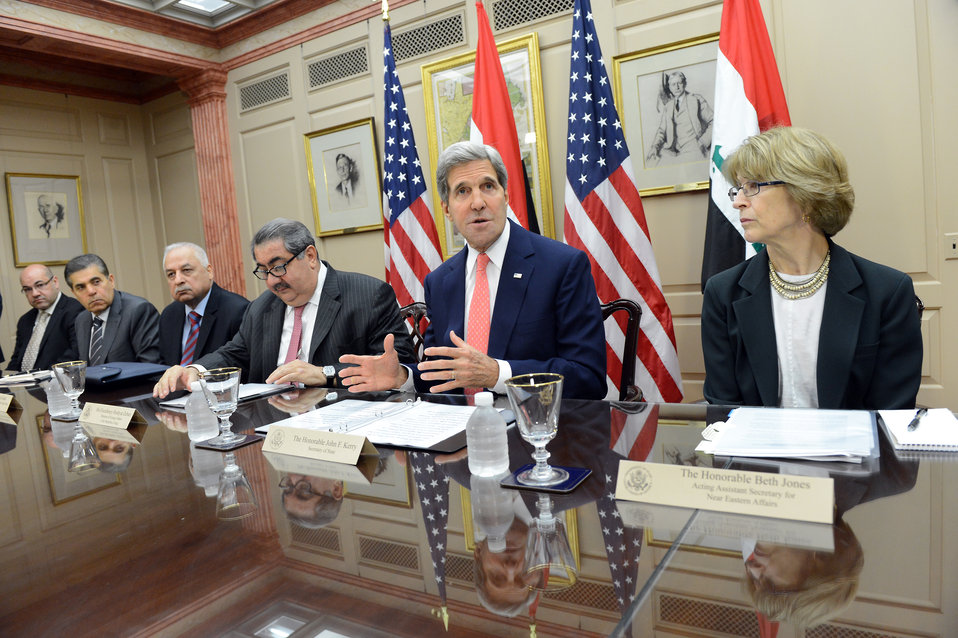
Secretary Kerry Delivers Remarks at the Fourth Meeting of the U.S.-Iraq Political and Diplomatic Joint Coordination Committee

U.S. Secretary of State John Kerry, with Iraqi Foreign Minister Hoshyar Zebari, delivers remarks at the fourth meeting of the Political and Diplomatic Joint Coordination Committee (JCC), under the U.S.-Iraq Strategic Framework Agreement (SFA), at the U.S. Department of State in Washington, D.C., on August 15, 2013.